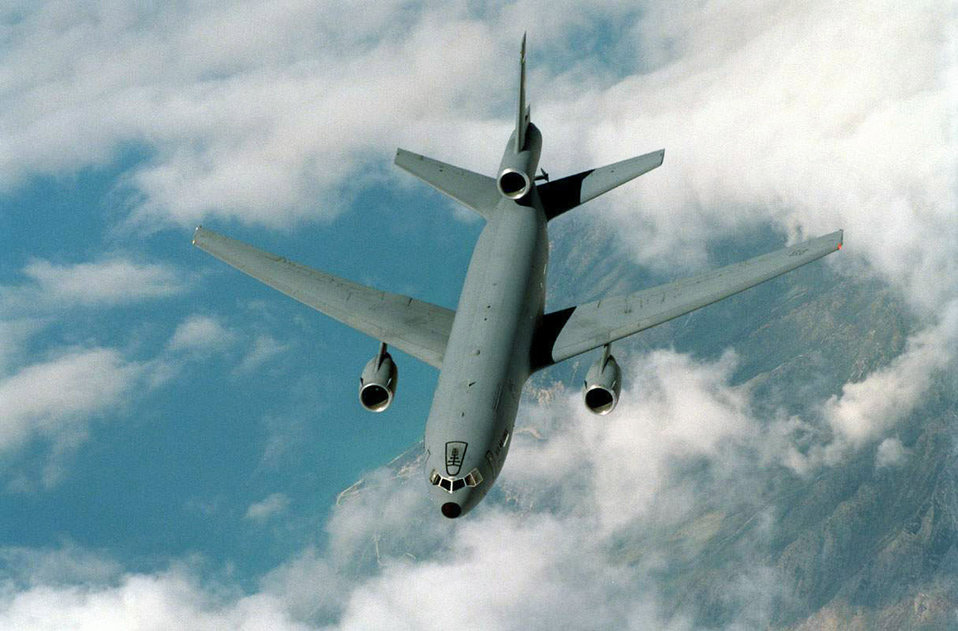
KC-10A Extender

OPERATION ENDURING FREEDOM -- A KC-10A Extender tanker/transport aircraft continue to provide aerial refueling and cargo delivery in support of Operation Enduring Freedom.